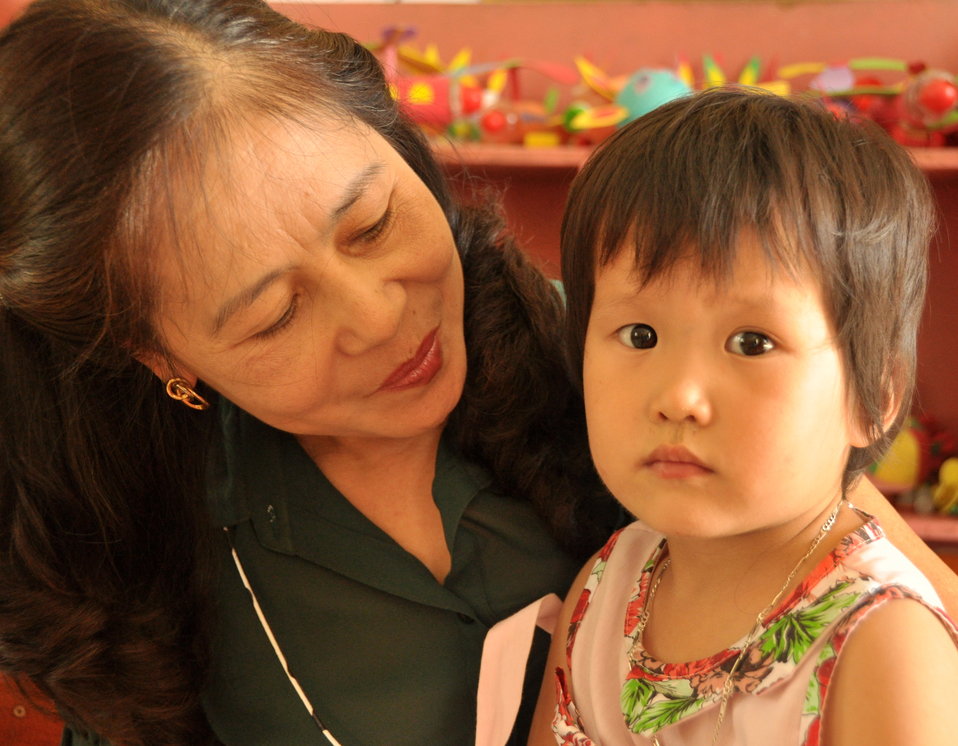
USAID Delivers Deworming Medication to Kindergartners in Nam Dinh Province

Children of Vietnam's Nam Dinh Province receive deworming medicine in a program supported by USAID and World Vision Australia.
June 1, 2013